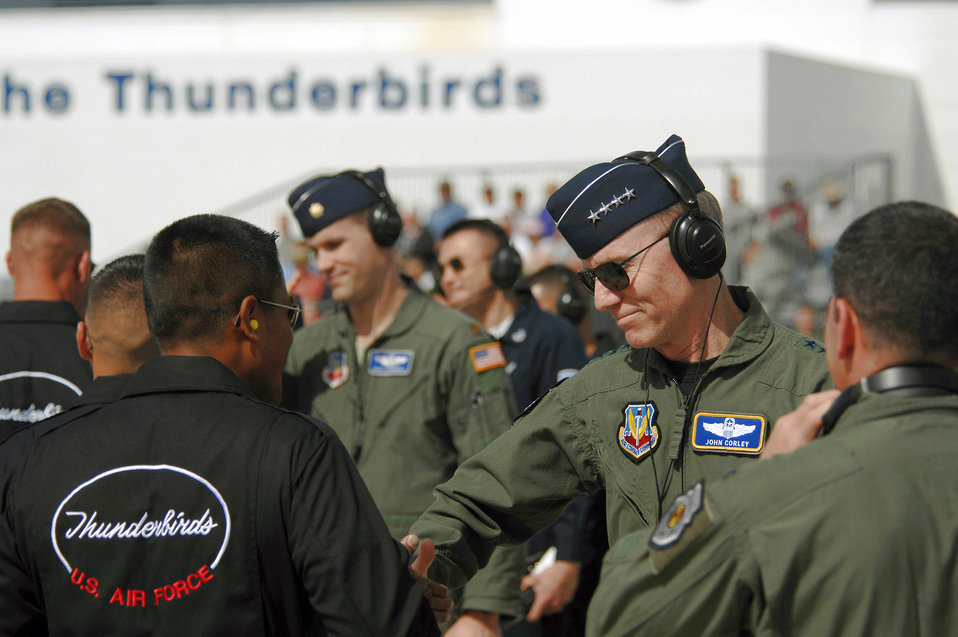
Thunderbirds begin 2008 season

Gen. John D.W. Corley shakes hands with members of the Air Force Thunderbirds prior to the March 11 acceptance show at Nellis Air Force Base, Nev. The acceptance show marks the beginning of the 2008 show season, which includes 37 showsites in the United States and Canada. General Corley is the commander of Air Combat Command.